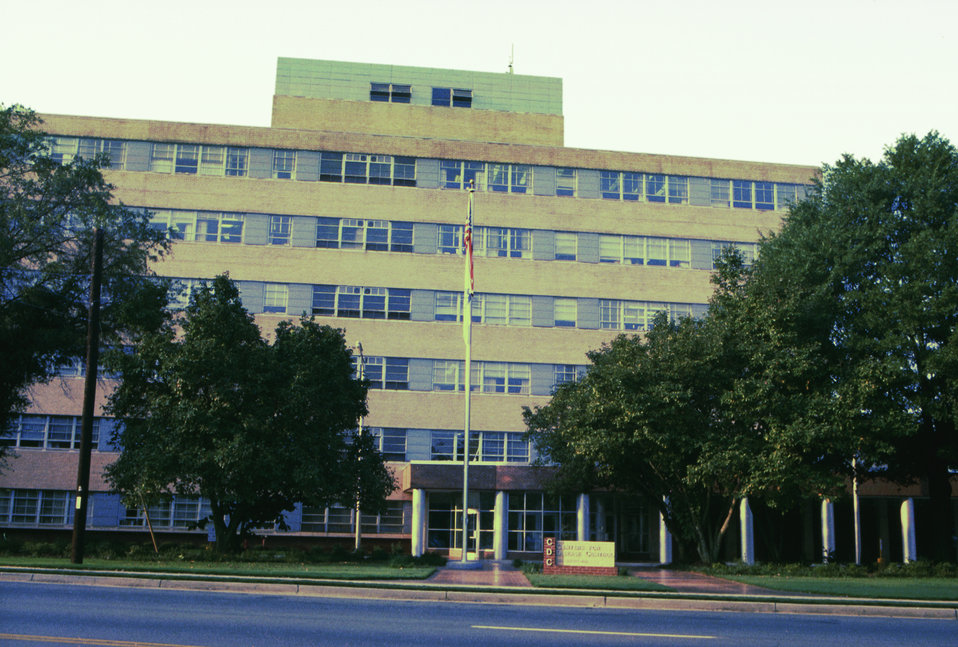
A photograph of the front of CDC, Building 1, Clifton Road, Atlanta, Georgia shot sometime during the 1980's.